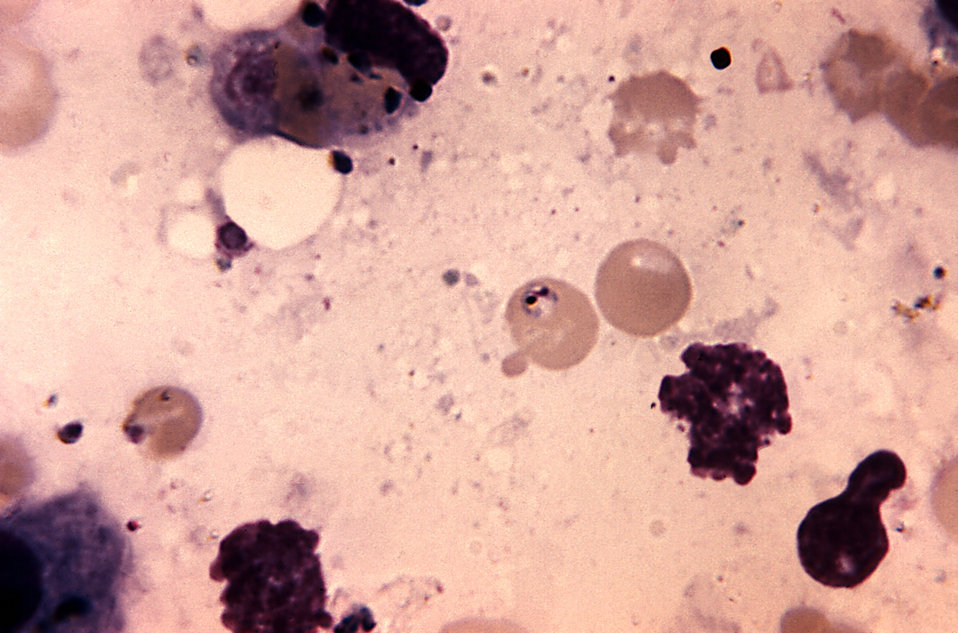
This photomicrograph of liver tissue taken at autopsy depicts P. malariae using oil immersion technique; Magnified 1125X.